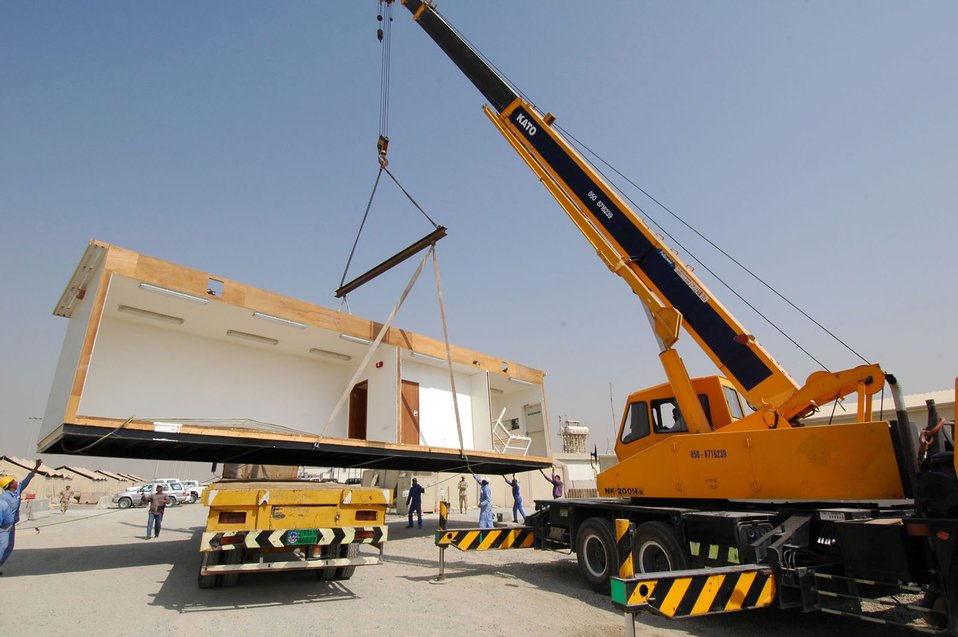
TCA trailer move

SOUTHWEST ASIA (AFPN) -- Contractors take a section of the learning resource center building off its foundation. The building is headed to the Temporary Cantonment Area here.